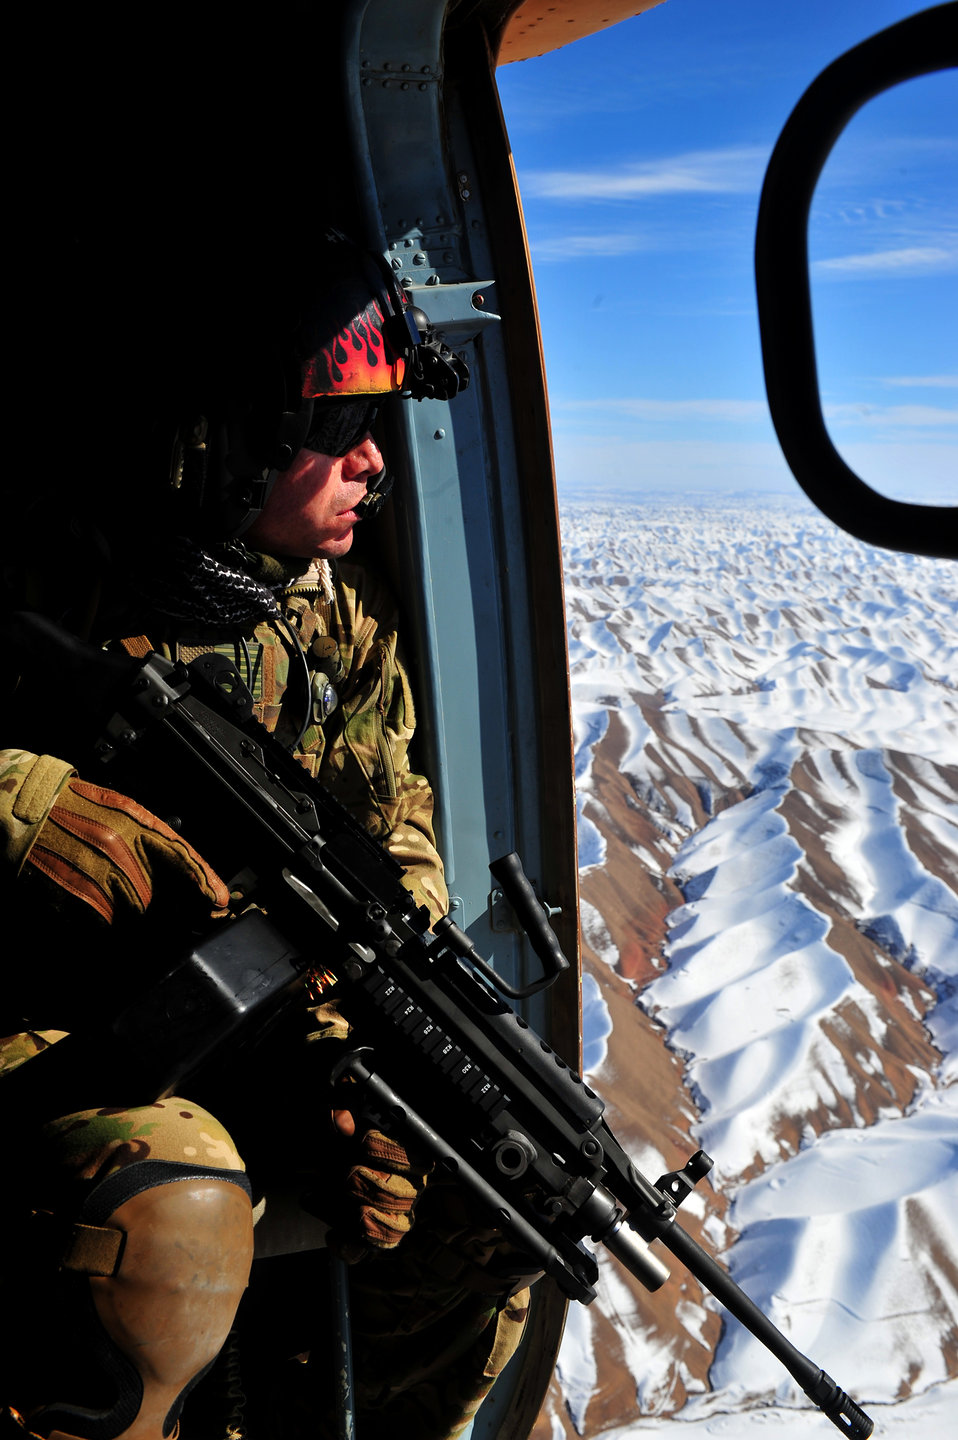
Eyes on

Tech. Sgt. Christian Corella, covers his sector from the door of an Mi17 Hip during an emergency resupply flight Nov. 11, 2011, through western Afghanistan. The U.S. and Afghan flight crews provided supplies to a remote Afghan border patrol outpost. Corella is an aerial gunner from the 88th Test and Evaluation Squadron at Nellis Air Force Base, Nev.